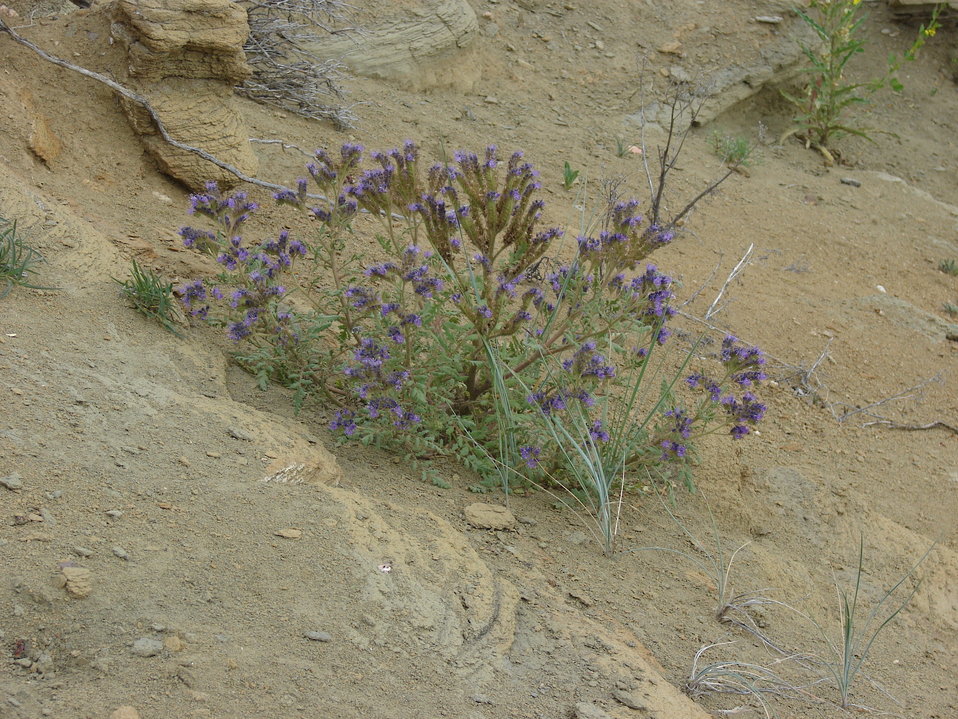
North Park phacelia in full bloom in late July.

Photo credit: USFWS

...........................................................................

BACKGROUND:
North Park phacelia (Phacelia formosula) is a member of the waterleaf family (Hydrophyllaceae) is found in “North Park” of north central Colorado, near the small town of Walden. The bright purple flowers and lobed leaf margins make this species easy to spot in July and August. The plant is a biennial, surviving for one year as a rosette of leaves before flowering and dying the following year. The plant is found on barren exposures of the Coalmont Formation that are easily eroded (see the habitat pictures). Roughly 16,000 individuals are known from six separate populations and the entire species is known from an area measuring roughly 10 miles in either direction (north to south, east to west).

The species was discovered, at one location, in 1918 by the Colorado botanist, George Osterhout. Additional sites were not located until 1979. Because of the limited distribution, small population sizes and threats to the species, North Park phacelia was listed as endangered under the Endangered Species Act in 1982. Threats to the species today include: heavy livestock use, off-road vehicle traffic, oil and gas development, residential development, a lack of regulatory mechanisms, and potential effects from climate change.

Genetic and taxonomic research into the species’ relationships with close relatives in Larimer and Grand counties is underway. Further locations of these Phacelia are being sought to better understand these relationships.

Several populations of North park phacelia occur either partially or wholly on private and State lands. Conservation actions on these properties are voluntary. Funding is available to landowners wanting to conserve the species. Please contact Gina Glenne or Ellen Mayo at 970-243-2778 for further information on this species and ways that you can help with conservation and recovery.